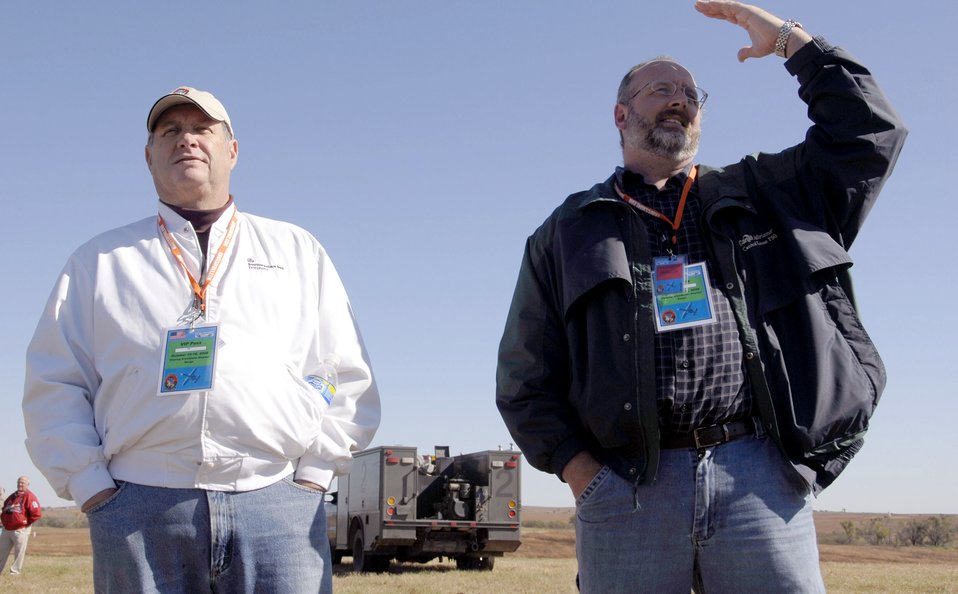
Hawgsmoke 2008

Former Marine Aaron White (right) reminisces about the day when he called for air support and was surprised to see an A-10 Thunderbolt II suddenly appear. Larry Powell, a fellow Salina city council member, intently listened as A-10s flew overhead. Fourteen A-10 squadrons from across the Air Force are competing in Hawgsmoke 2008 Oct. 14 to 18. Hawgsmoke is a biennial A-10 bombing and aerial gunnery competition, which was hosted this year by the Air Force Reserve Command's 442nd Fighter Wing based at Whiteman Air Force Base, Mo.